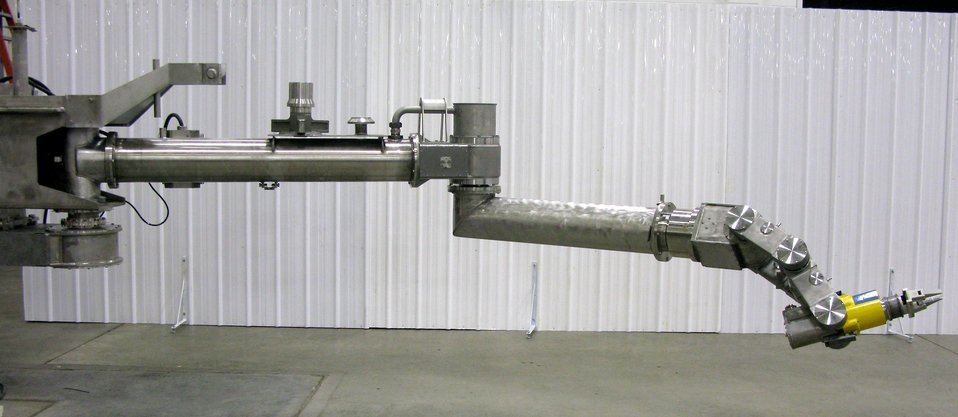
SRS - Electro-mechanical manipulator

One of two electro-mechanical manipulators purchased with Recovery Act funds.
The electro-mechanical manipulator is an essential piece of equipment in the liquid waste operations at the Savannah River Site (SRS) because it goes where no humans can go.

Equipped with electric motors in its arm-like extension, the manipulator is used inside the highly radioactive processing area at the Defense Waste Processing Facility (DWPF). There, hazardous waste is mixed with a molten glass and poured into stainless steel containers forming a solid glass-like product suitable for permanent storage. An operator controls the manipulator, performing operations and maintenance activities in safe confines outside the processing area, looking through a shielded glass window.